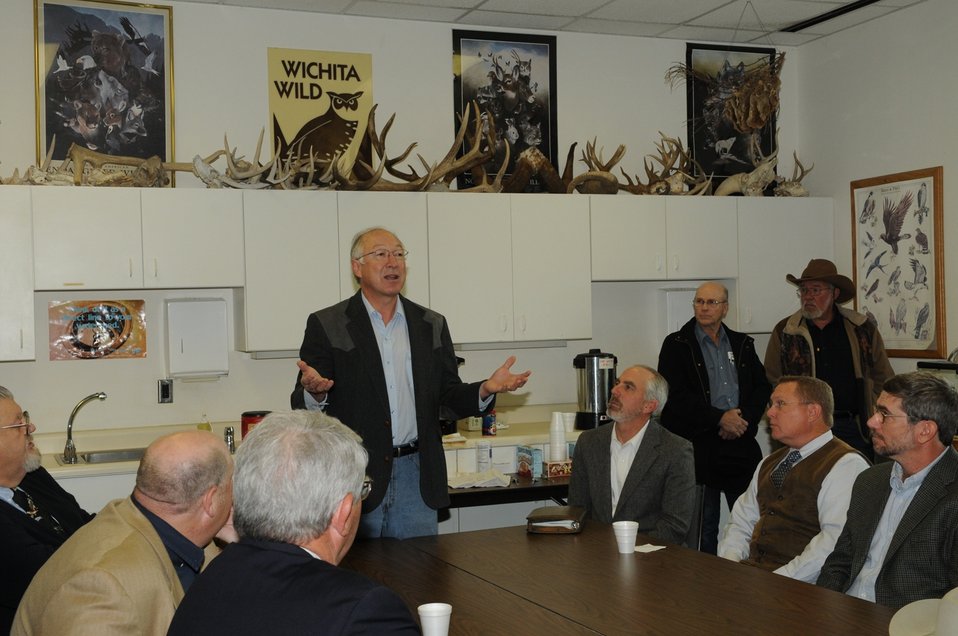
Conservation Principals Meeting

Secretary of the Interior Ken Salazar speaks at the Conservation Principals Meeting.